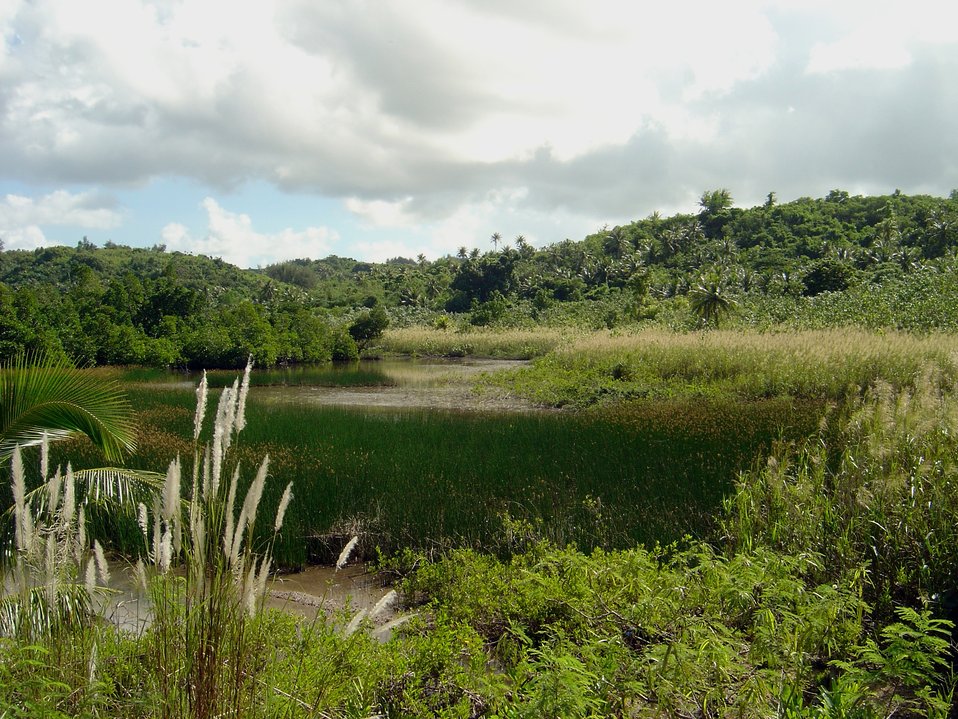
Phragmites marshland in wetlands of Guam.